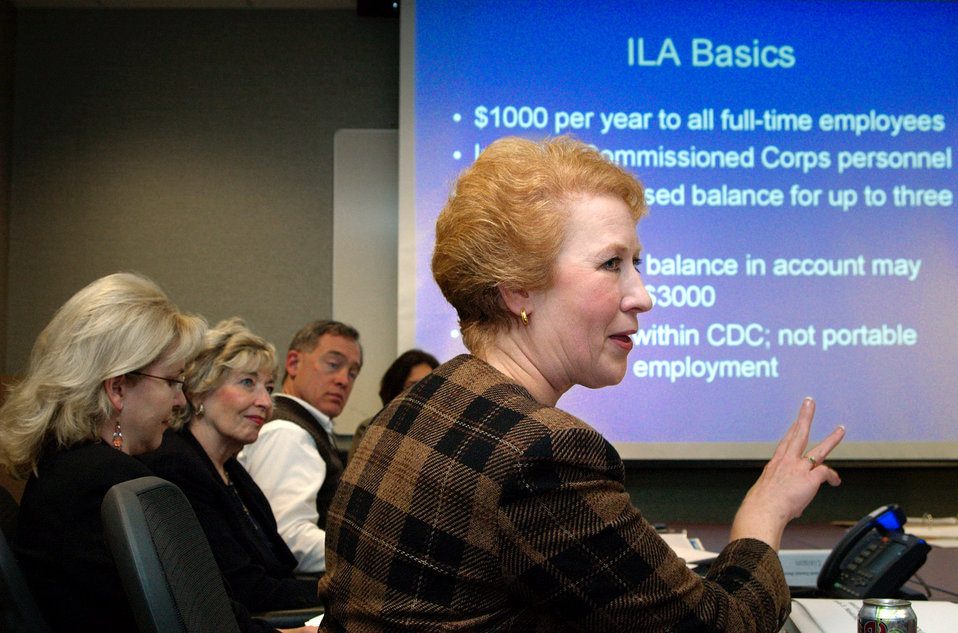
This photograph showed from front to back, VP for Programs, CDC Foundation, Verla Neslund as she was presenting details of individual learning accounts to the CDC's Excellence in Learning Council (ELC). Other members present were (front to back) Dir. of the Div. of Emergency Preparedness and Response, Lynn Steel; Sr. Service Fellow, Joan Cioffi; Dir. of the Office of Workforce and Career Development (OWCD), Stephen B. Thacker.